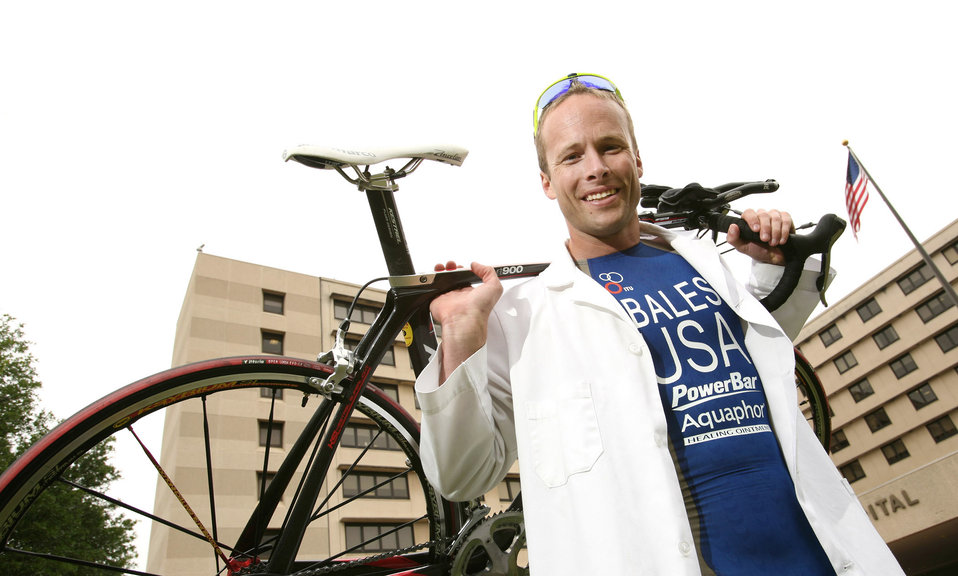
Male Athlete of 2010 Named

Capt. James Bales has been named U.S. Air Force Male Athlete of the Year for 2010. Captain Bales is one of the military's elite athletes and is part of the two-year U.S.A.F. World Class Athlete Program, which allows him to train for the 2012 Olympic Trials and Olympic Games. Captain Bales is an orthopedic surgeon with the 21st Force Support Squadron on staff at the U.S. Air Force Academy Hospital